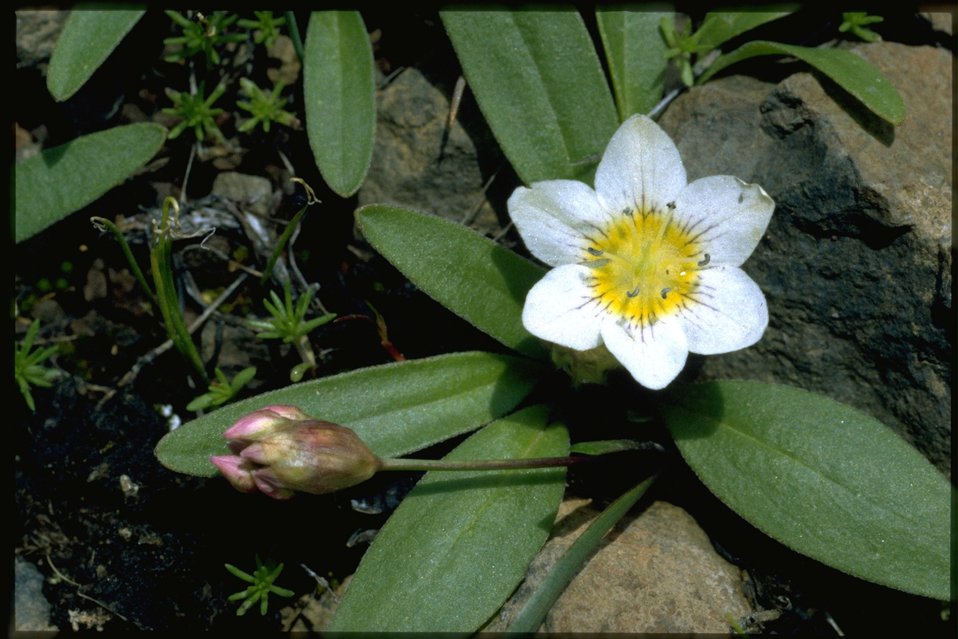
Closeup shot of Dwarf Hesperochiron, Hesperochiron pumilus, wildflowers.